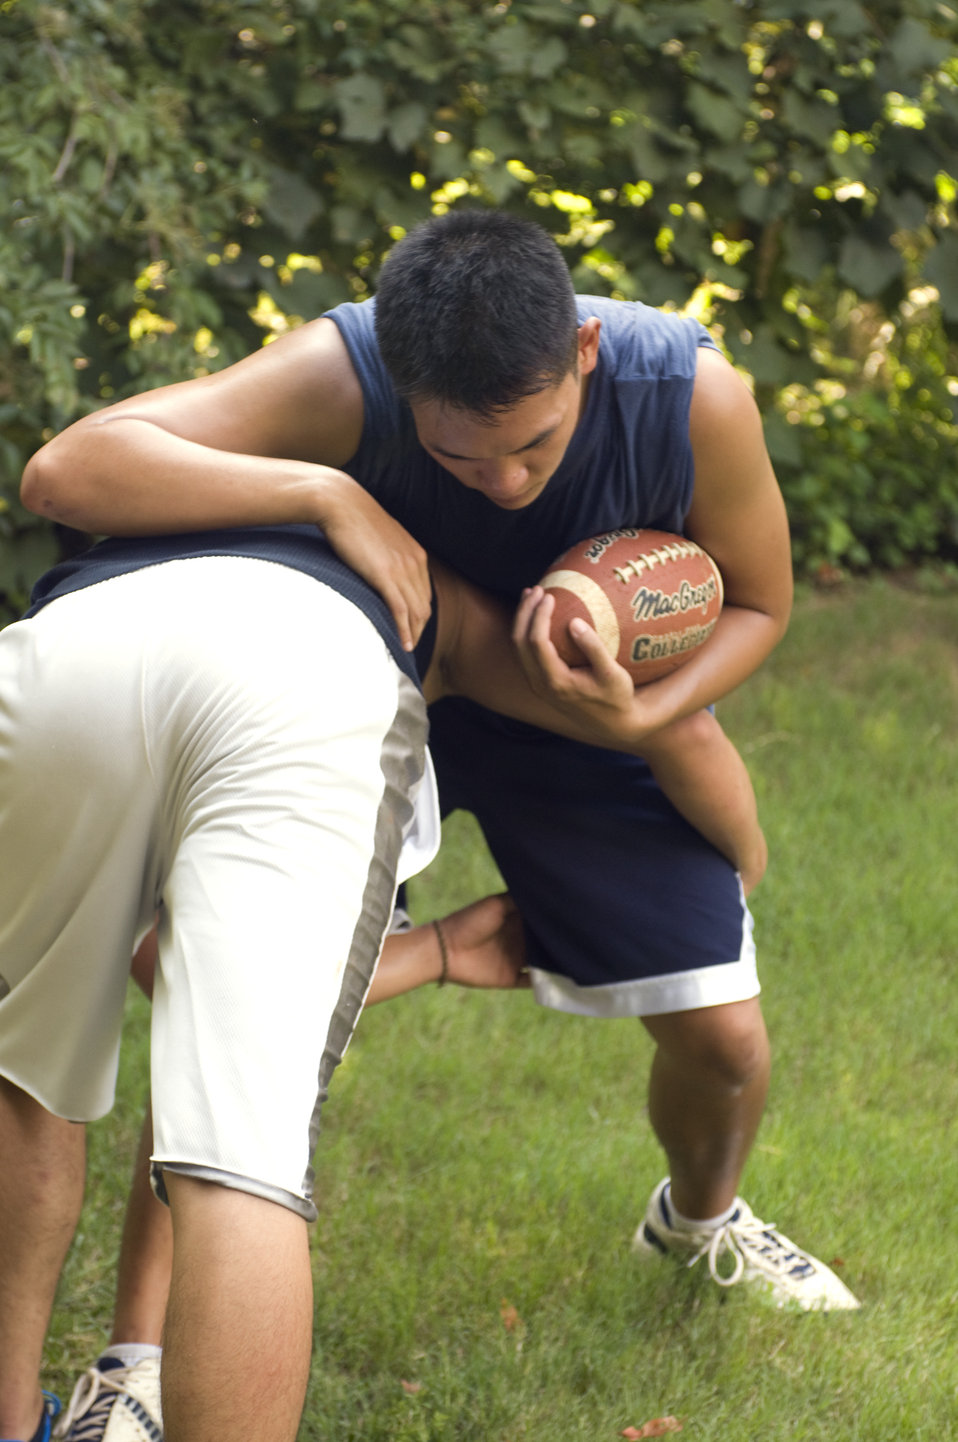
Here we see two young men practicing some tactics which would help them hone their skills on the football field. Neither of the two was wearing padding, or a helmet, but they were wearing a protective application of sunscreen to their sun-exposed skin, which would protect them from the sun's harmful ultraviolet rays. Hopefully, they'd also packed, or had access to some drinking water, which would keep them hydrated in the heat.